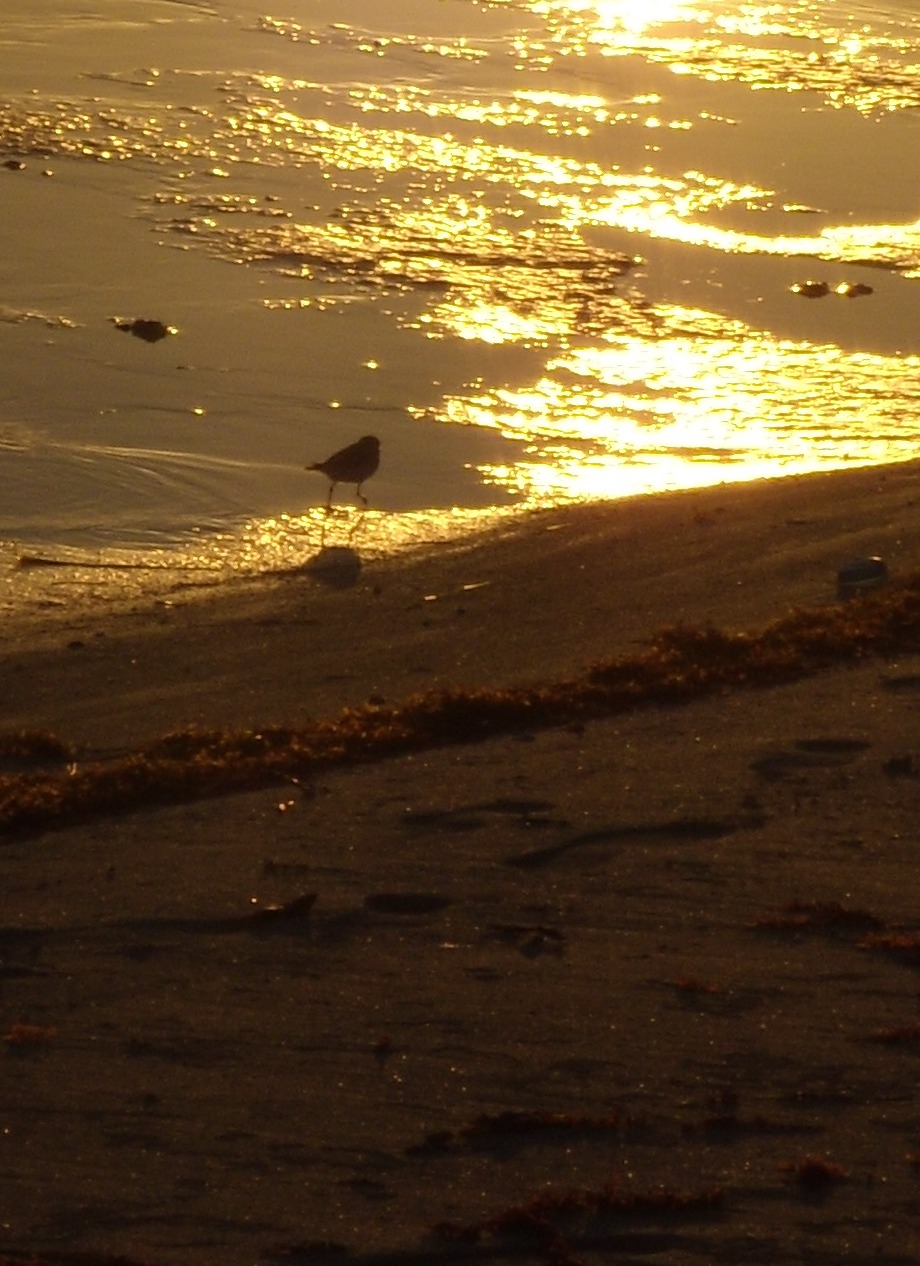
Piping plover at sunset

On Great Inagua Island.